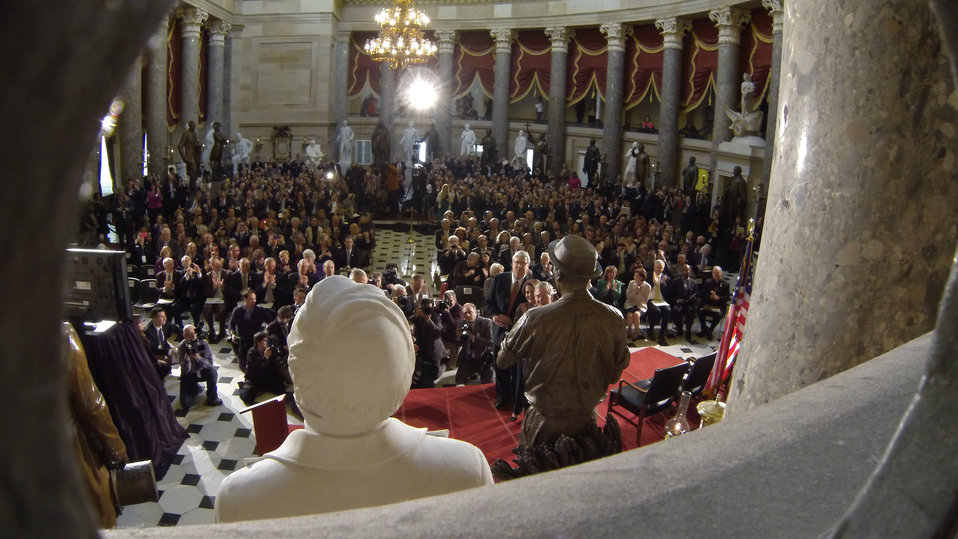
The Dr. Norman E. Borlaug statue is unveiled in the National Statuary Hall at the U. S. Capitol in Washington, D.C. on Tuesday, Mar. 25, 2014. Seen in front of statue is Mr. Bill Borlaug (son of Dr. Borlaug). Also unveiling the statue is Minority Leader of the House of Representatives Nancy Pelosi, Agriculture Secretary Tom Vilsack, Speaker of the House of Representatives John Boehner, Iowa Governor Terry Branstad and Majority Leader of the U.S. Senate Harry Reid. Today commemorates 100 years since Dr. Borlaug’s birth. Through his scientific and humanitarian achievements, Nobel Laureate Dr. Norman E. Borlaug (1914-2009) has been credited with saving millions of people from starvation in developing countries. His collaborative work with scientists in Mexico on a high-yielding, disease resistant dwarf wheat sparked the Green Revolution of the 1960s. The National Statuary Hall Collection in the U.S. Capitol is composed of statues donated by individual states to honor persons notable in their history.